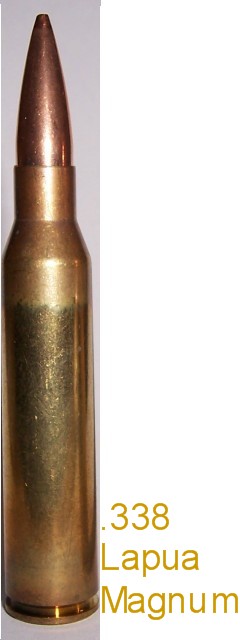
A .338 Lapua Magnum cartridge loaded with 250gr SMK